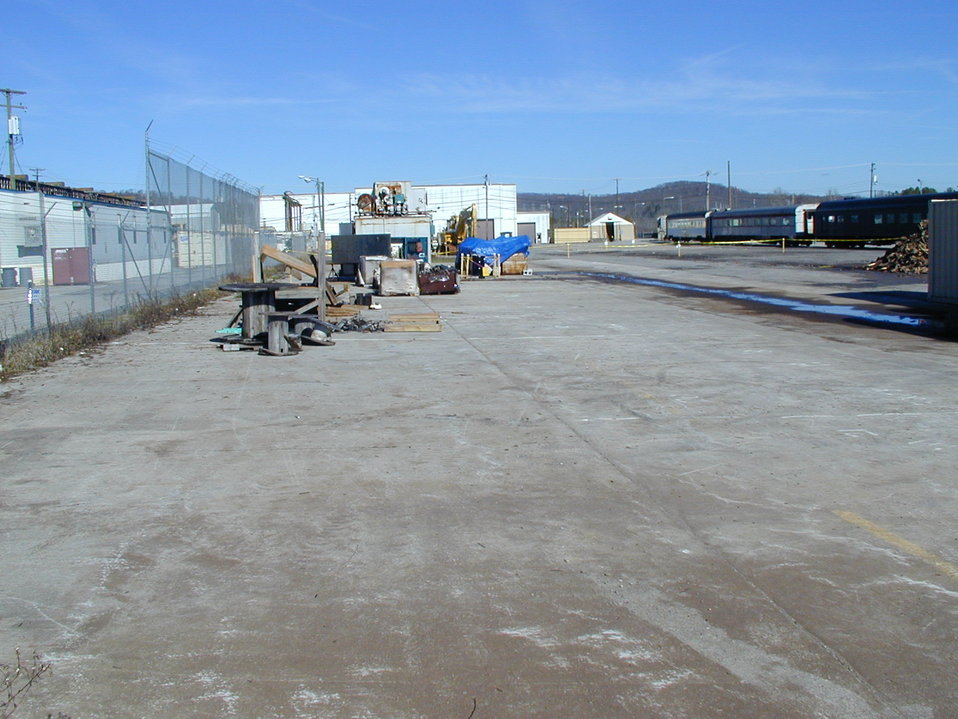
‘Project Wipeout’ Helps Clean Up Oak Ridge

The site of the debris pile following cleanup in Project Wipeout.

Project Wipeout is an effort to locate, identify, and remove legacy waste scattered throughout the site.

In August 2011, EM’s contractor in Oak Ridge, URS | CH2M Oak Ridge (UCOR), began using available workers and other resources for the mission to eliminate primarily non-radioactive construction debris at locations across the site. Some of these areas are small with a few pallets and recyclable metal. Others cover thousands of square feet in debris. All of them require active surveillance and maintenance to account for the material and ensure they are stable and secure.

Although personnel and resources are fully deployed most of the time, the initiative maximizes efficiency during occasional slower periods between peak work demands.